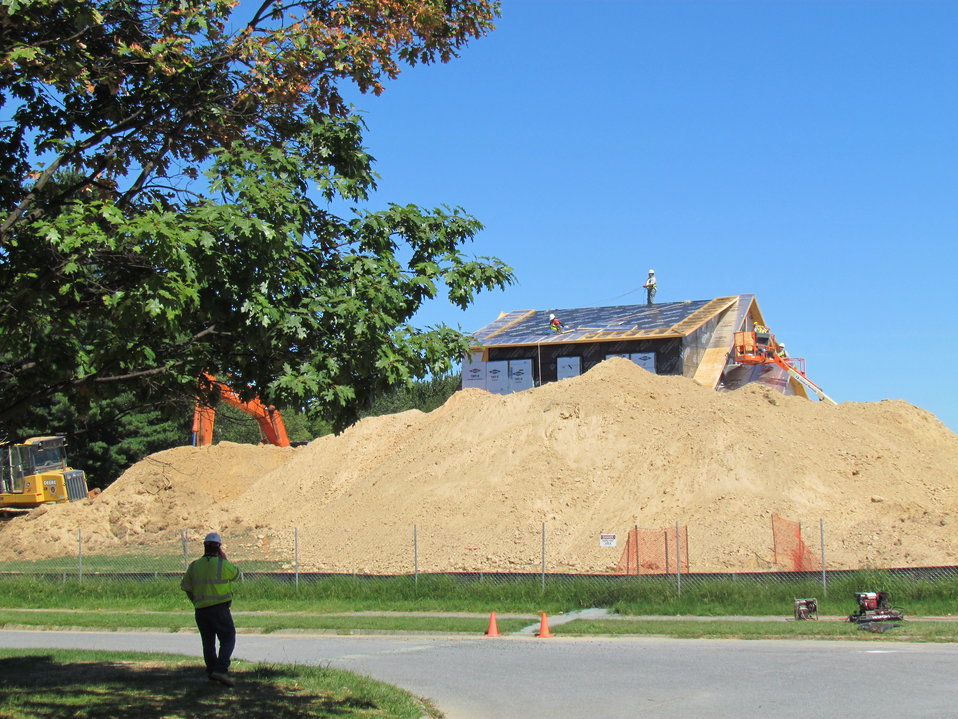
Net-Zero Energy Residential Test Facility - Photo showing substantial amount of soil that needed to be evacuated to connect sewage line of facility to existing sewage line.